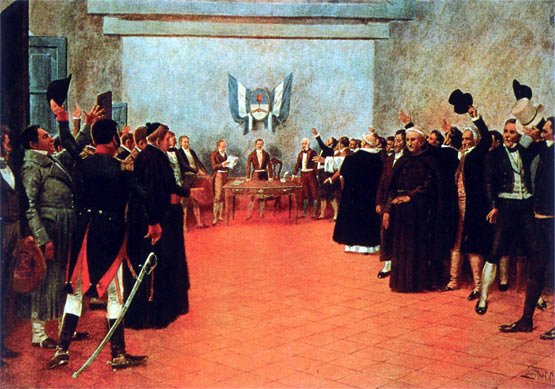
Español: Congreso de Tucumán